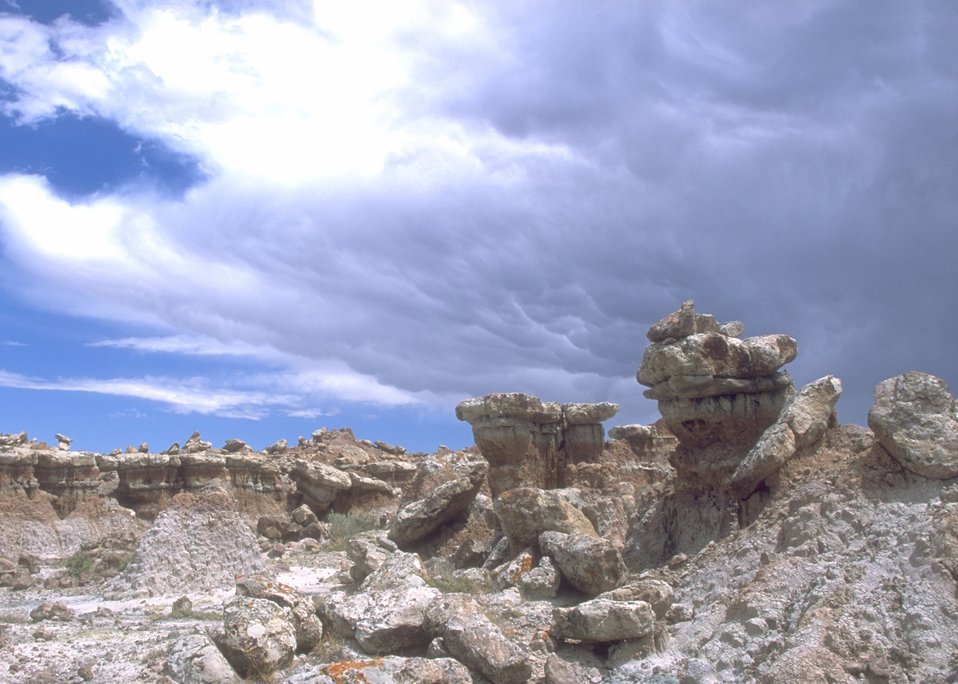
Gooseberry Interpretive Area, Worland Field Office.